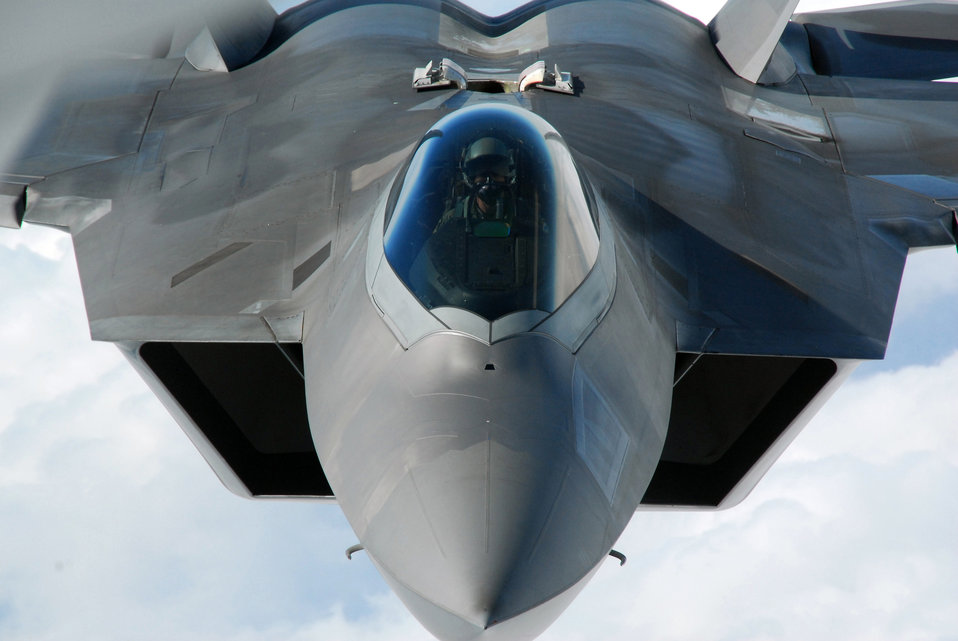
Bring it on

An F-22 Raptor pilot lines up his aircraft March 31, 2011, to be refueled by a KC-135 Stratotanker.